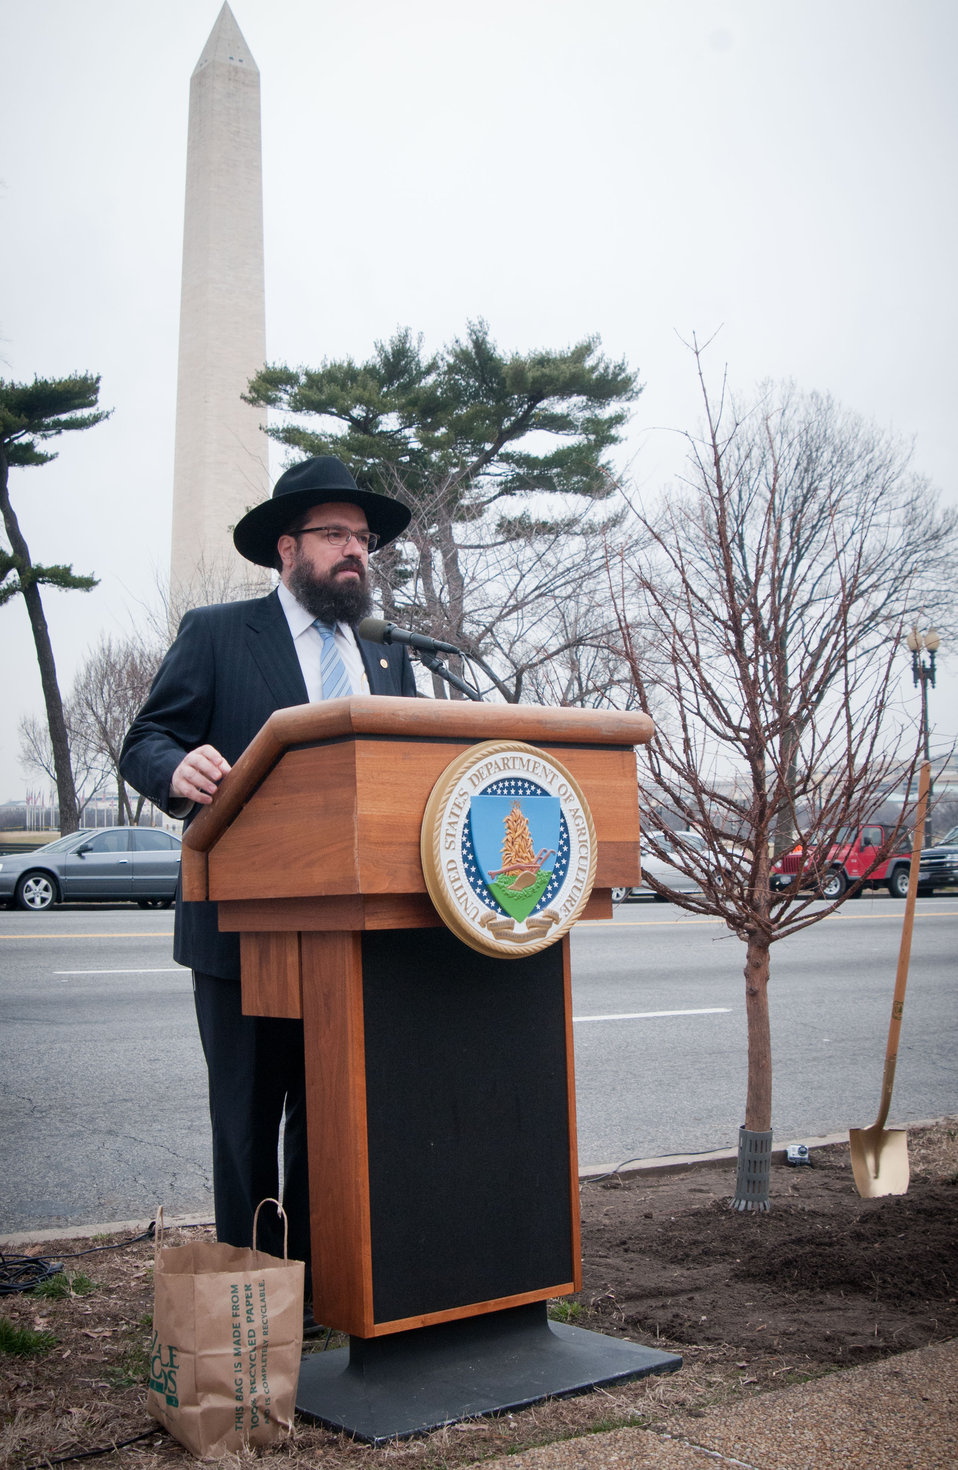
Director of American Friends of Lubavitch Rabbi Levi Shemtov, offered a prayer and talked about the meaning of Tu B’Shevat “The New Year of the Trees,” during the celebration, at the District of Columbia western lawn next to the USDA Headquarters, Whitten Building at 14th Street and Independence Ave SW, Washington, D.C. on Wednesday, February 8, 2012. Rabbi said, “It is the first day where we mark the rainfall coming to a close and vegetable life starting to begin drawing sustenance from the ground.” One of the customs is to partake of the seven types of grains and fruits listed in the Torah (i.e. wheat, barley, figs, pomegranates, olive, and dates). Later, the audience was able to eat some of these and other offerings.